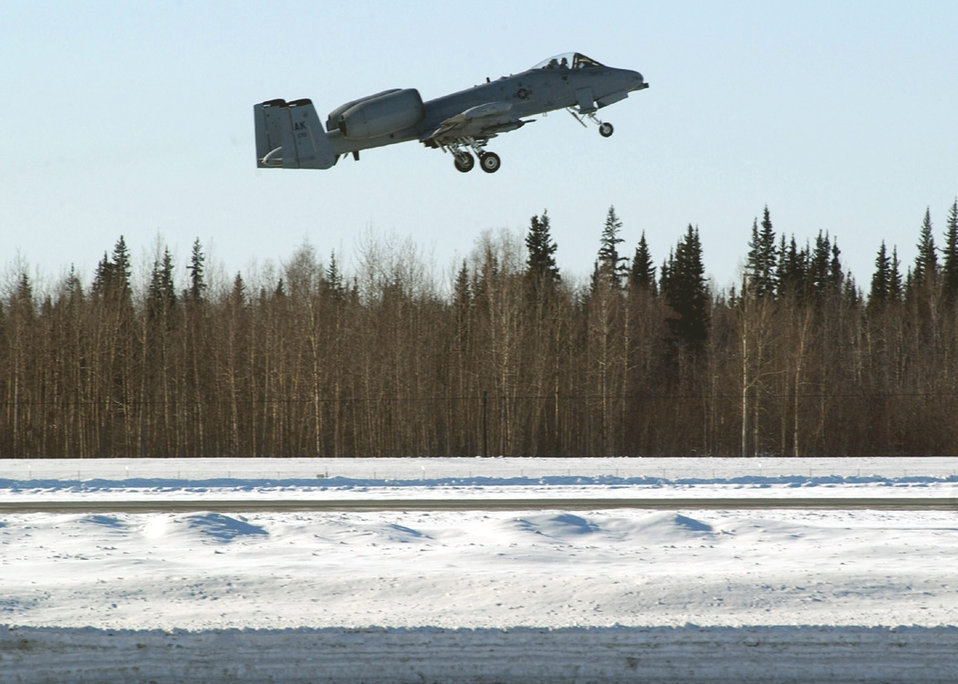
'Thunder' in the sky

EIELSON AIR FORCE BASE, Alaska -- An A-10 Thunderbolt II from the 355th Fighter Squadron takes off from the flightline here March 6. The 355th FS's mission is to rapidly deploy Thunderbolts and support people to any location at a moment's notice. Operations can include close-air support, forward-air control, air interdiction and combat search-and-rescue sorties.